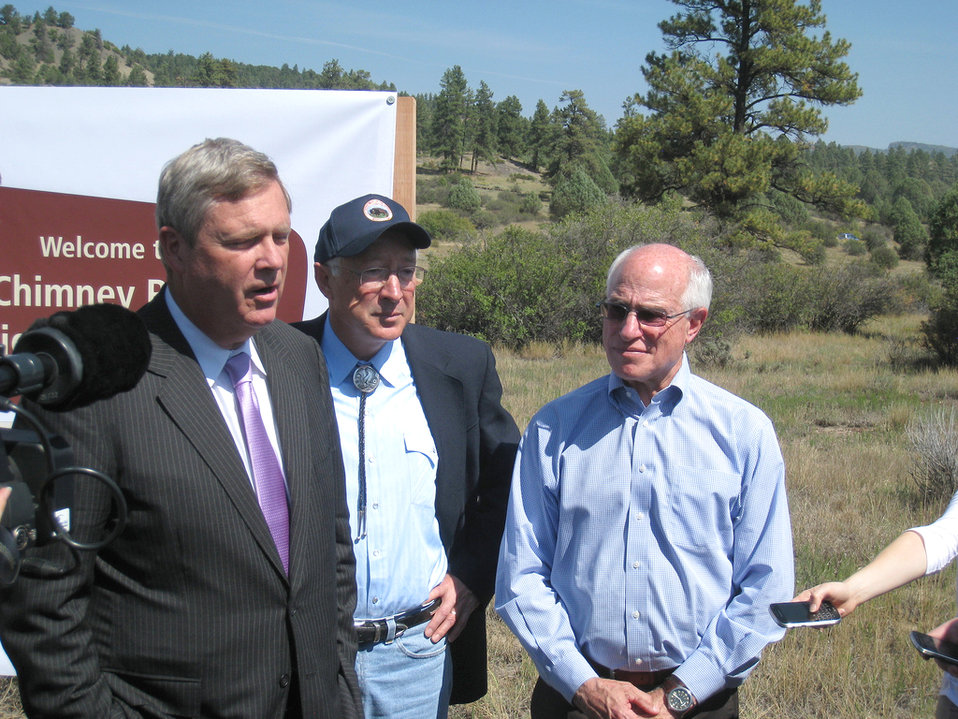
(L to R) Agriculture Secretary Tom Vilsack, Interior Secretary Ken Salazar, and Agriculture Under Secretary Natural Resources and Environment Harris Sherman speak to the press at the at the dedication of Chimney Rock as a National Monument in the San Juan National Forest in Southwest Colorado on Friday, Sept. 21, 2012. Chimney Rock is of great spiritual importance to Pueblos and other Tribes in the southwest corner of Colorado. With its twin sandstone pillars and its massive Chaco- style masonry walls perched 1,000 feet above the Piedra River Valley the monument protects a landscape important to the continuation of traditional cultural practices of the modern Puebloan Indians.